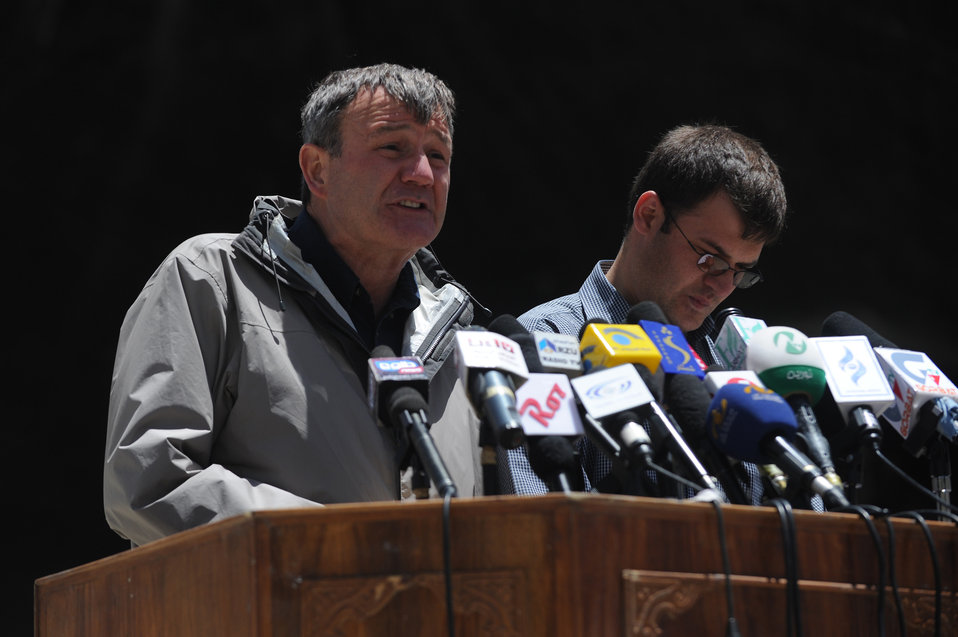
U.S. Ambassador Karl W. Eikenberry makes remarks during a ceremony to mark the beginning of renovations at the Salang Tunnel on the border of Parwan and Baghlan Provinces, Afghanistan, on Wednesday, June 15, 2011. (S.K.Vemmer/Department of State)